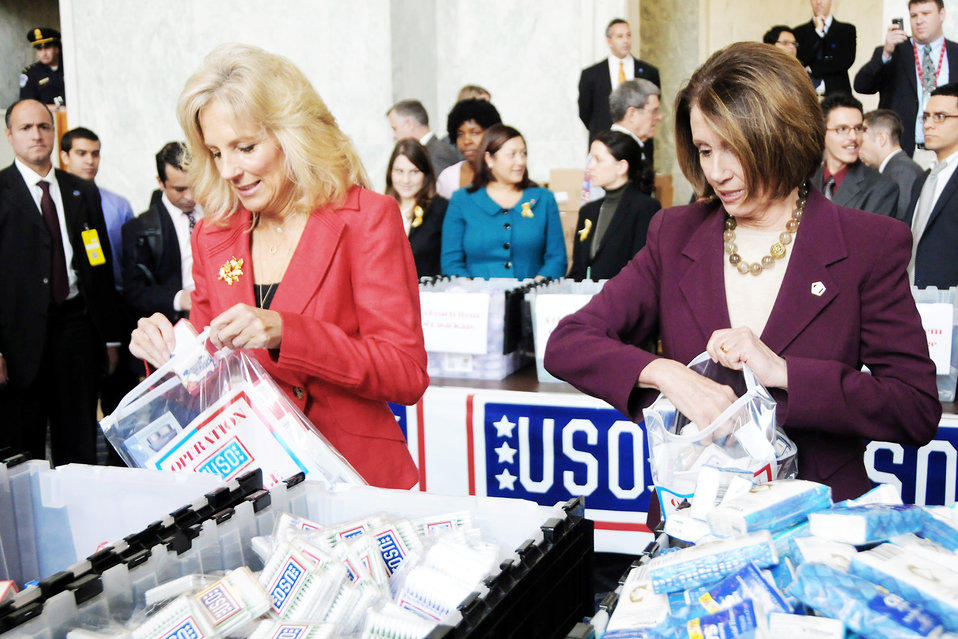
USO officials target military women with care packages

Dr. Jill Biden, wife of Vice President Joe Biden, and Speaker of the House Nancy Pelosi participated in a USO-sponsored event to build some 2,000 care packages that contain items specifically for female servicemembers Nov. 18, 2009, on Capitol Hill. This is the first time the USO has targeted care packages specifically to servicewomen.